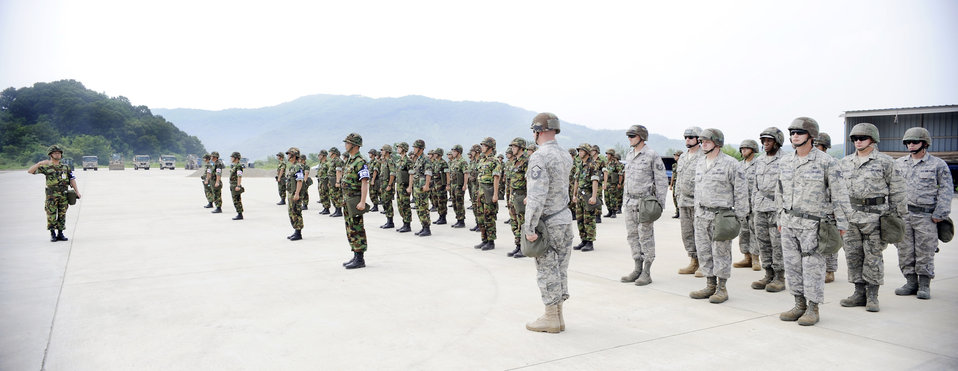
Osan AB's airfield damage repair team train with South Korean air force

Airmen from the 51st Civil Engineer Squadron stand in formation before participating in a joint combined rapid runway repair training exercise with Airmen from the South Korean air force's 19th Tactical Fighter Wing and 91st Air Civil Engineer Group Aug. 19 at Jungwon Air Base, South Korea.